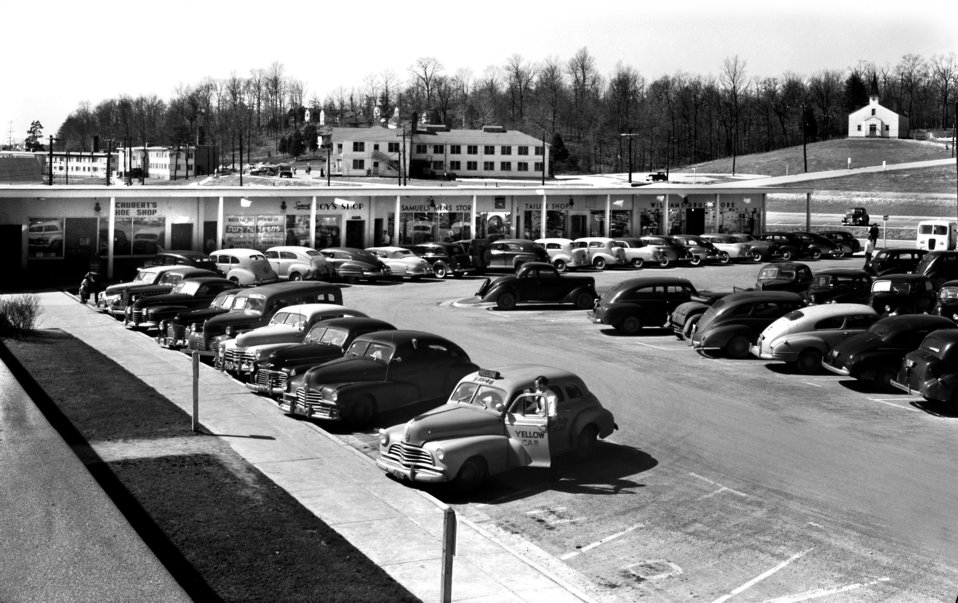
Jackson Square Shopping Center Oak Ridge 1948

4361-5b DOE photo Ed Westcott 3-6-1948 Oak Ridge Tennessee